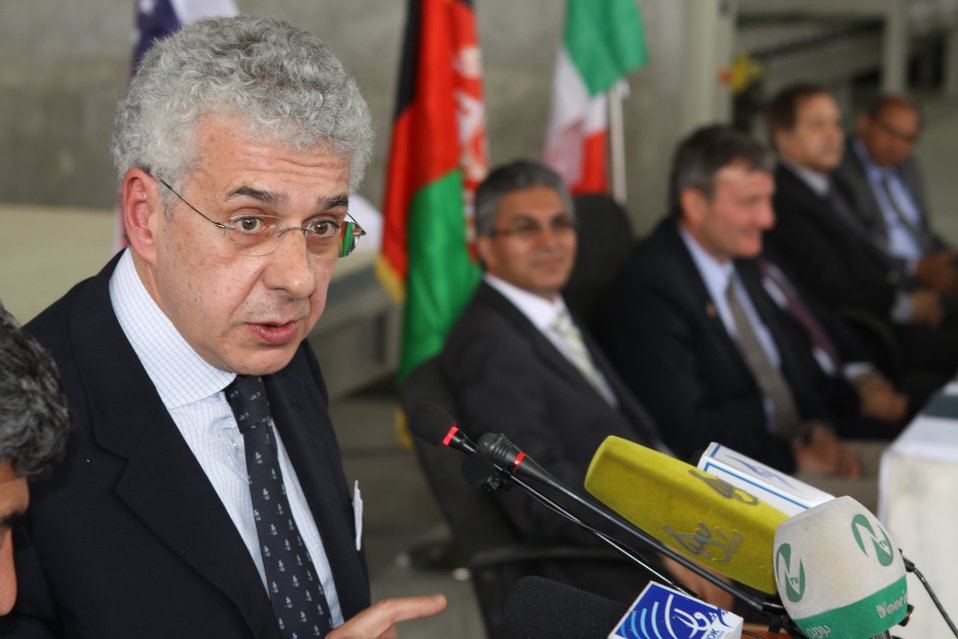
100525 Hirat Marble Conference 253